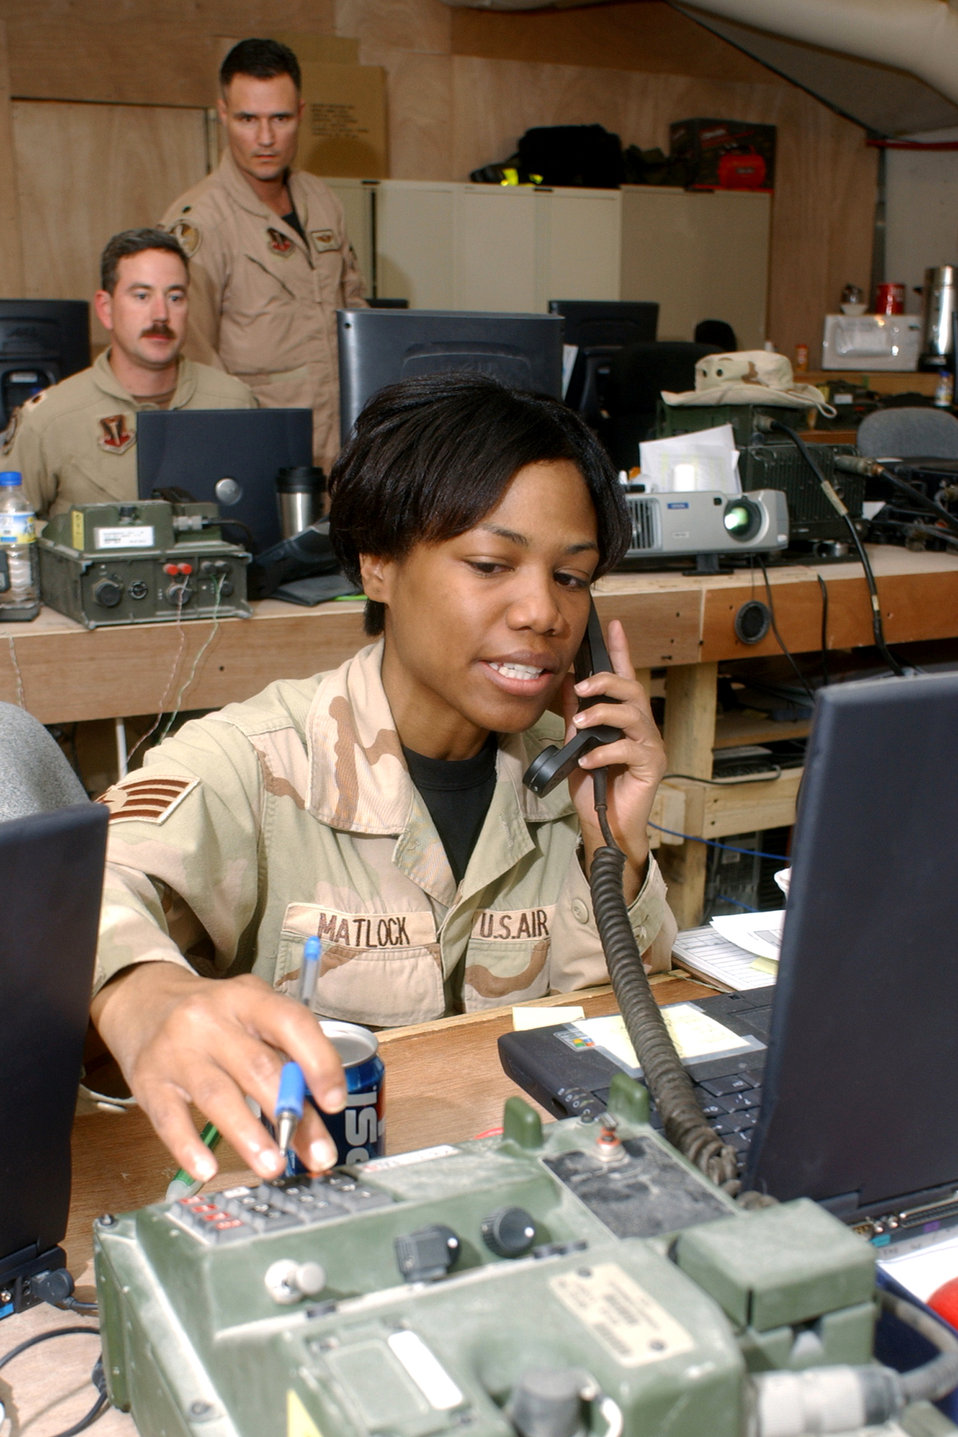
Coalition operations center

OPERATION IRAQI FREEDOM -- Staff Sgt. Selena Matlock tracks aircraft take off and landing times at the Coalition Operations Center, ensuring Air Tasking Orders are updated. In the background, Lt. Col. Joseph Justice (standing) and Maj. David Wright, Coalition Operations Center directors, coordinate the flying schedule. All are assigned to the 379th Air Expeditionary Wing at a deployed location.